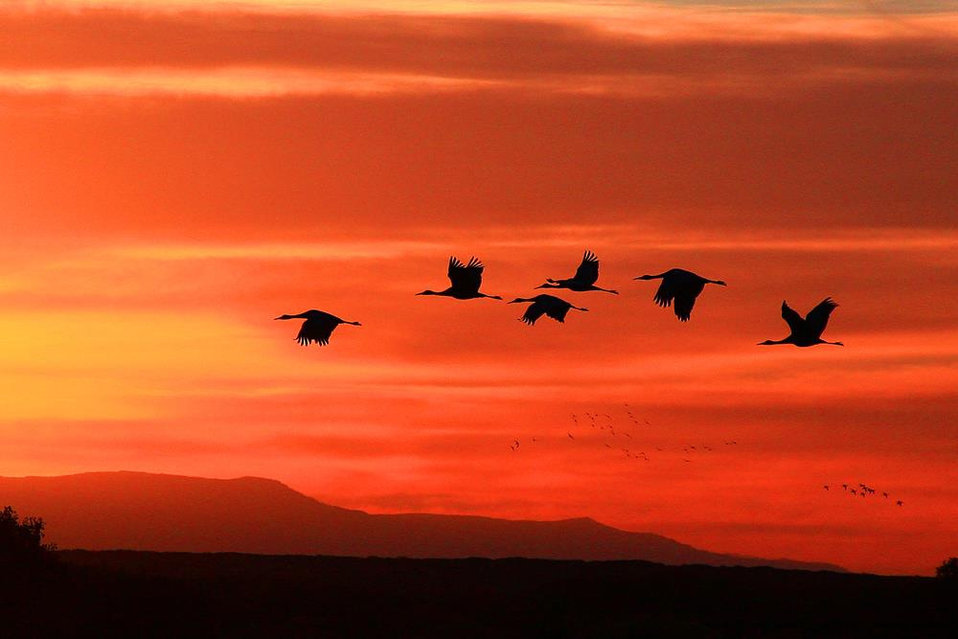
Sandhill Cranes at Sunset

Bosque del Apache National Wildlife Refuge, NM
(Photo: Marvin de Jong/USFWS)

May 10, 2012 was International Migratory Bird Day.